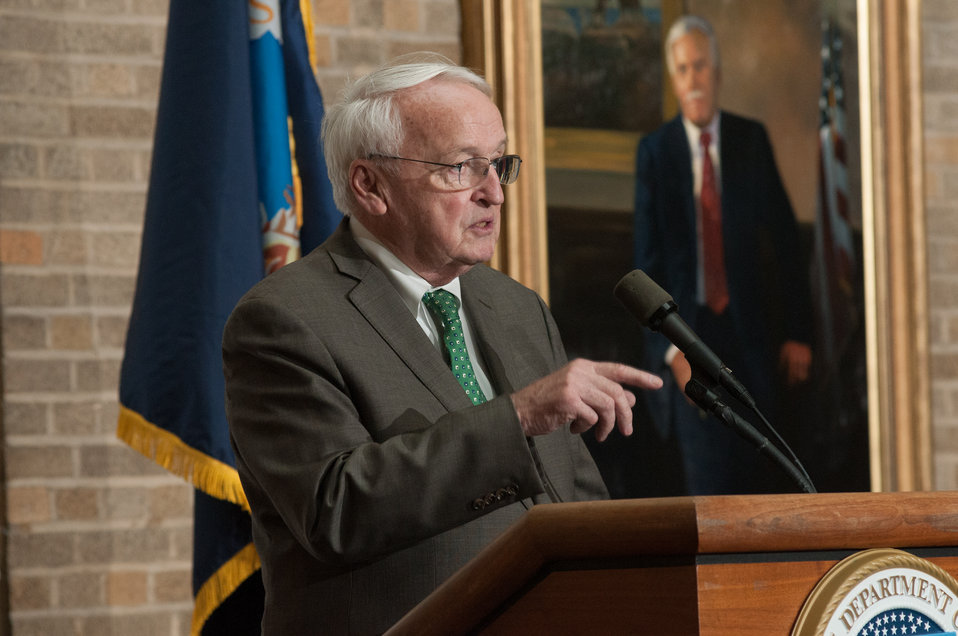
Agriculture Food, Nutrition, and Consumer Services (FNCS) Under Secretary Kevin Concannon, speaks at a luncheon with dairy producers, Dairy Management, Inc., (DMI) and other stakeholders from the dairy producers industry, at the Whitten Building Patio in Washington, D.C. on Tuesday, Feb. 26, 2013. Mr. Concannon mentioned that The Good Cow Company milks (that retain it's freshness longer than standard milks) has been approved for purchase and use in schools.